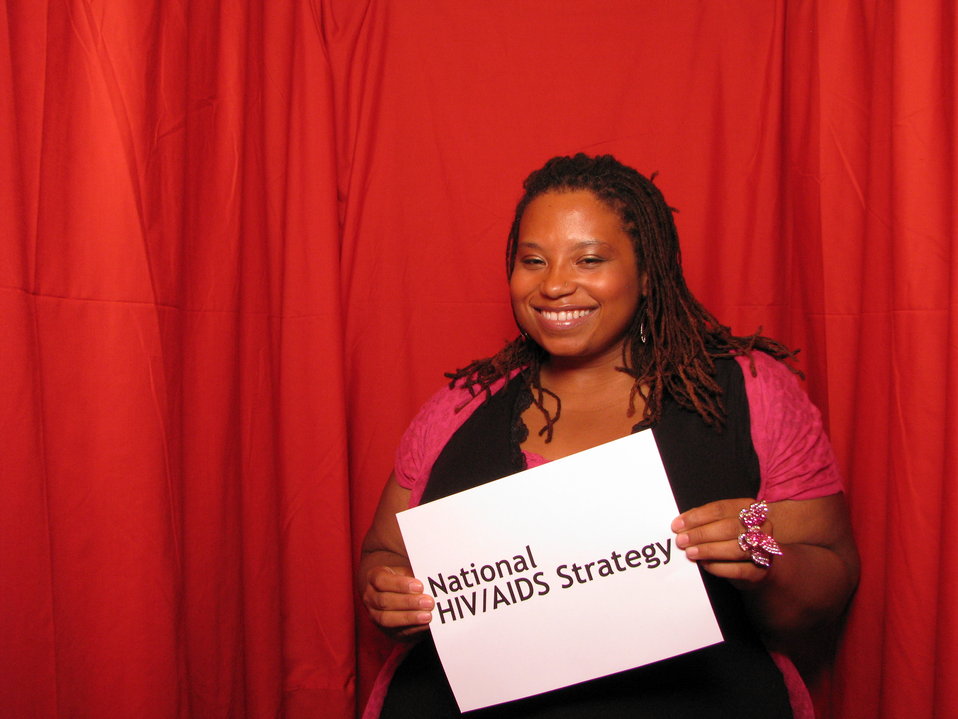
National HIV/AIDS Strategy

From the AIDS.gov photo booth at the U.S. Conference on AIDS, September 2010 (Orlando, FL).